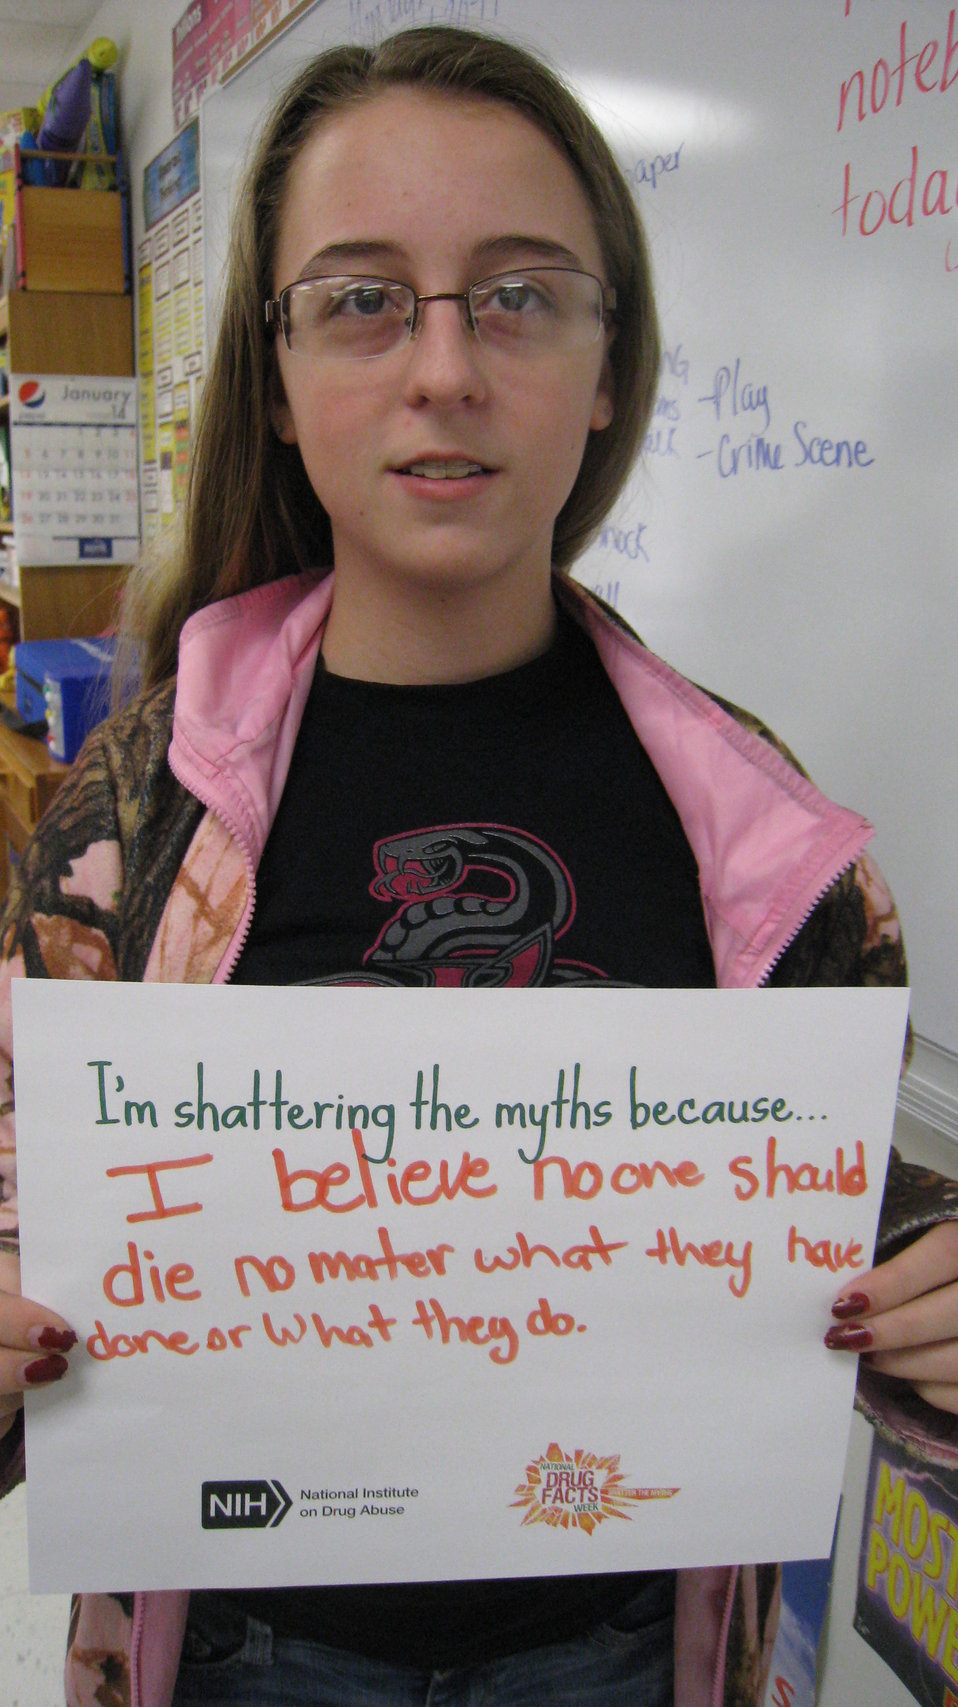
I'm Shattering the Myths Because...

Teenagers from the Van Buren County SAFE Coalition's, Youth Leadership Council (YLC) in Keosauqua, Iowa participate in various events during National Drug Facts Week, 2014.